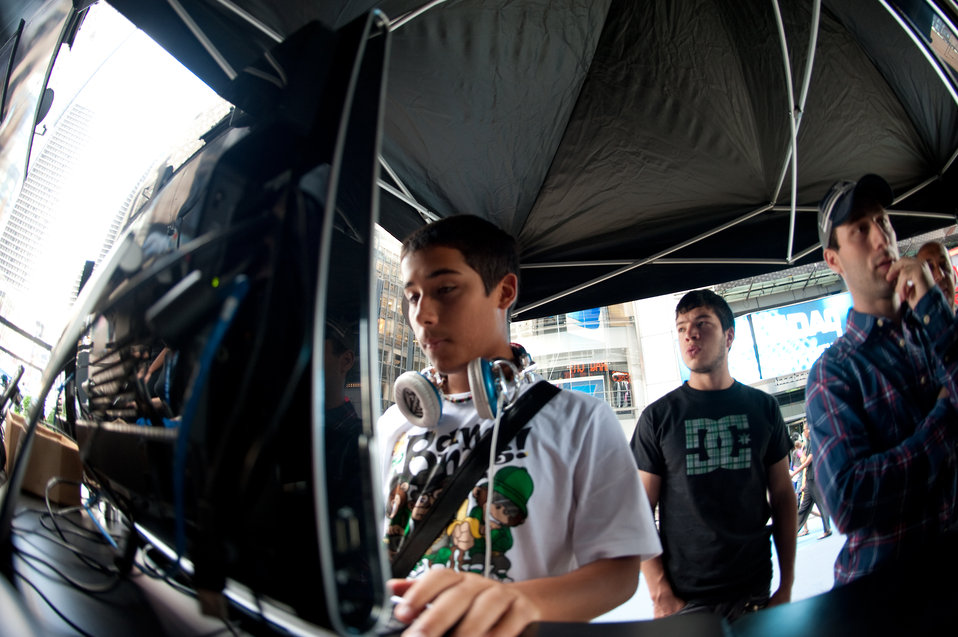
Air Force Week Now Showing in Times Square

Antonio Tedeschi takes a computer-based survey in the Stealth Tour during Air Force Week New York City Aug. 26, 2010 at Times Square. After completion, he will be offered a chance to operate the interactive consoles in a nearby trailer where he can test his skills associated with combat controllers, explosive ordnance disposal teams or Air Force tactical air-control party careers.